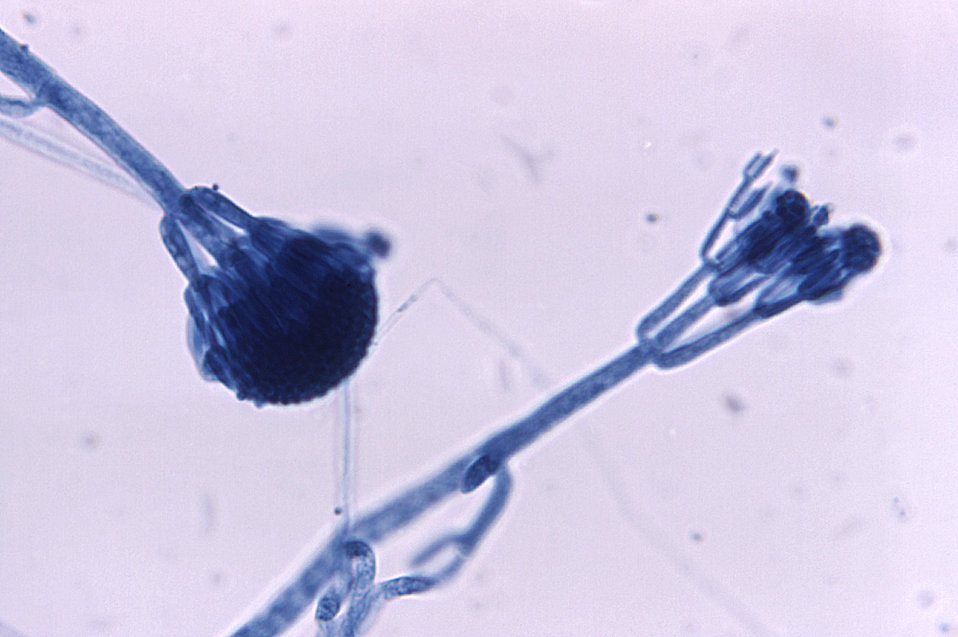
Magnified 400X, this photomicrograph revealed some of the ultrastructural morphology displayed by a specie of the filamentous fungus, Gliocladium.